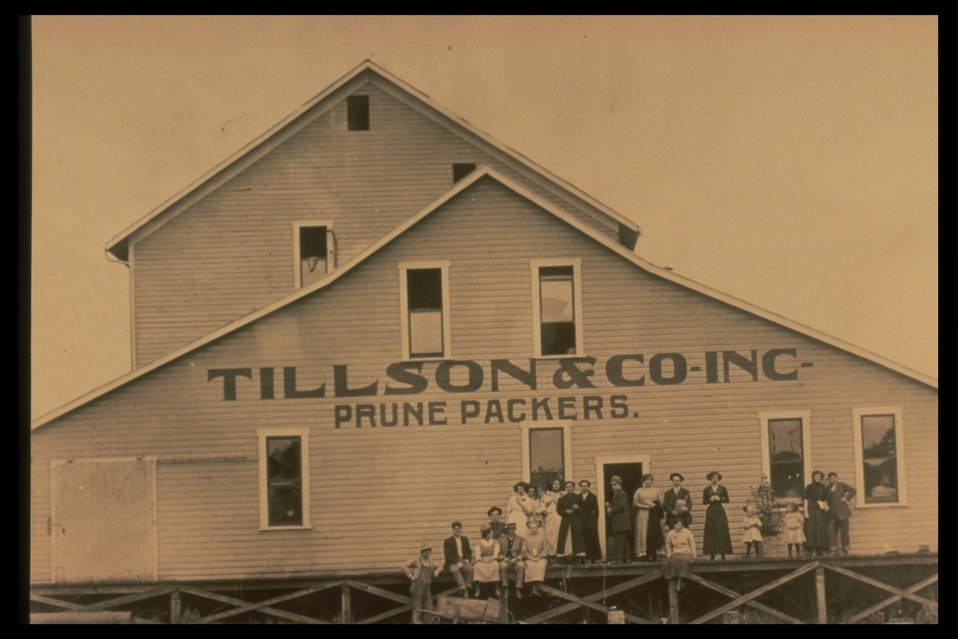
Black and white photo of workers posing at Tillson Prune Packers.